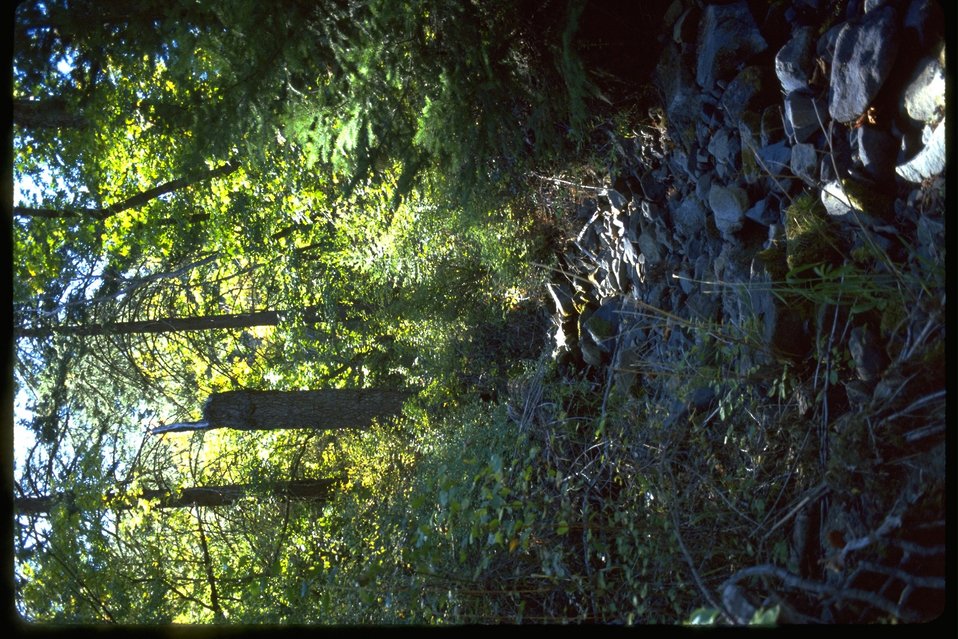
Scotch Creek RNA near Scotch Creek Falls.